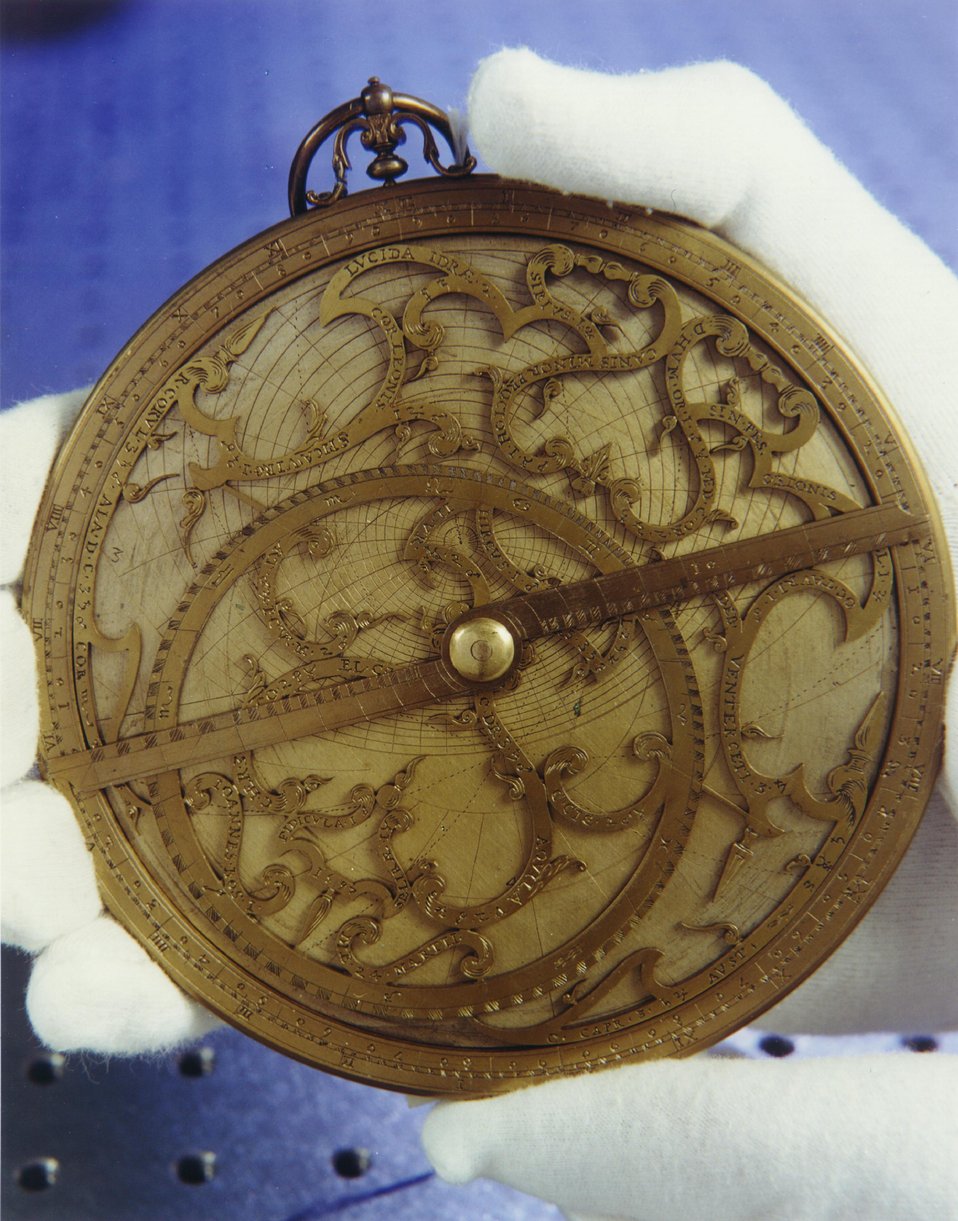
ANL'S ADVANCED PHOTON SOURCE PROVED THE AUTHENTICITY OF THIS 1597 ASTROLABE.

BEFORE THE TELESCOPE, ASTROLABES AIDED NAVIGATORS TO TELL TIME THROUGH THE POSITIONS OF THE STARS. ARGONNE'S ADVANCED PHOTON SOURCE IS ABLE TO REVEAL AN OBJECT'S COMPOSITION, CRYSTAL STRUCTURE AND THICKNESS WITHOUT DAMAGING THE OBJECT.